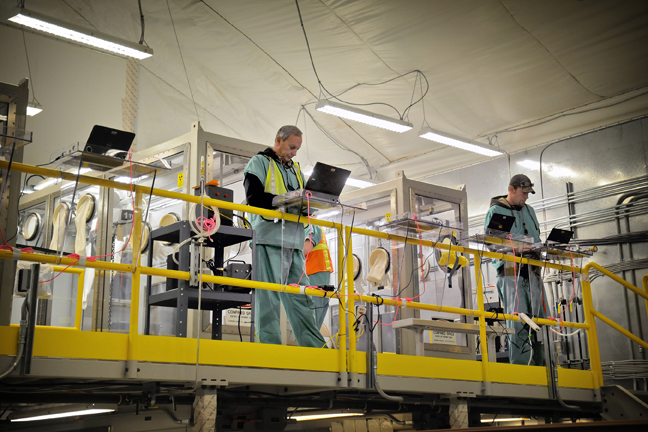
Idaho Recovery Act Workers

Recovery Act workers at the Idaho site enter visual examination information into a waste tracking database for each barrel of targeted waste that will be shipped out of Idaho to the Waste Isolation Pilot Plant in New Mexico. Workers are exhuming, sorting, and repackaging transuranic wastes from Pit 9 of the Idaho site's Radioactive Waste Management Complex facility.